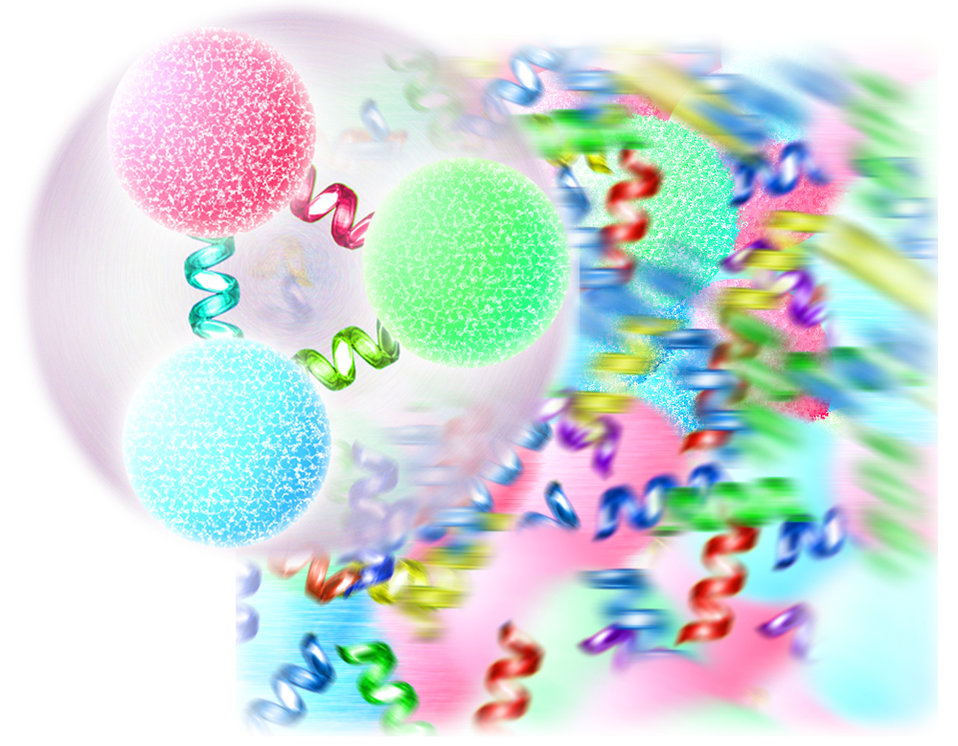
An ordinary proton and neutron is formed of three quarks bound together by gluons, carriers of color force at Lawrence Berkeley National Laboratory.
Above a critical temperature, proton and neutrons and other forms of hardronic matter 'melt' into a hot, dense soup of free quarks and gluons, the quark-gluon plasma.